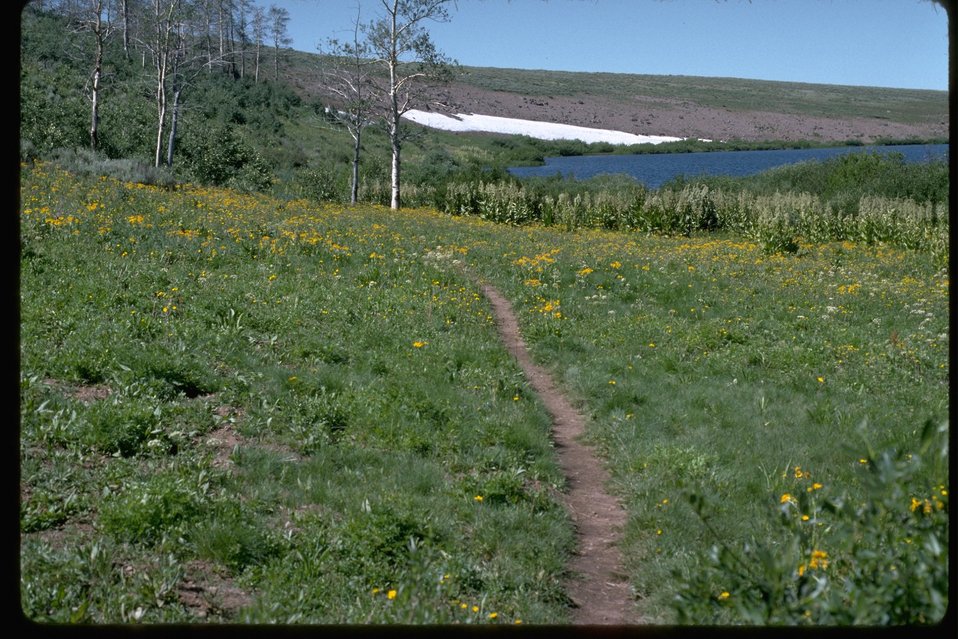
Foot path along the north side of Fish Lake at Steens Mountain.